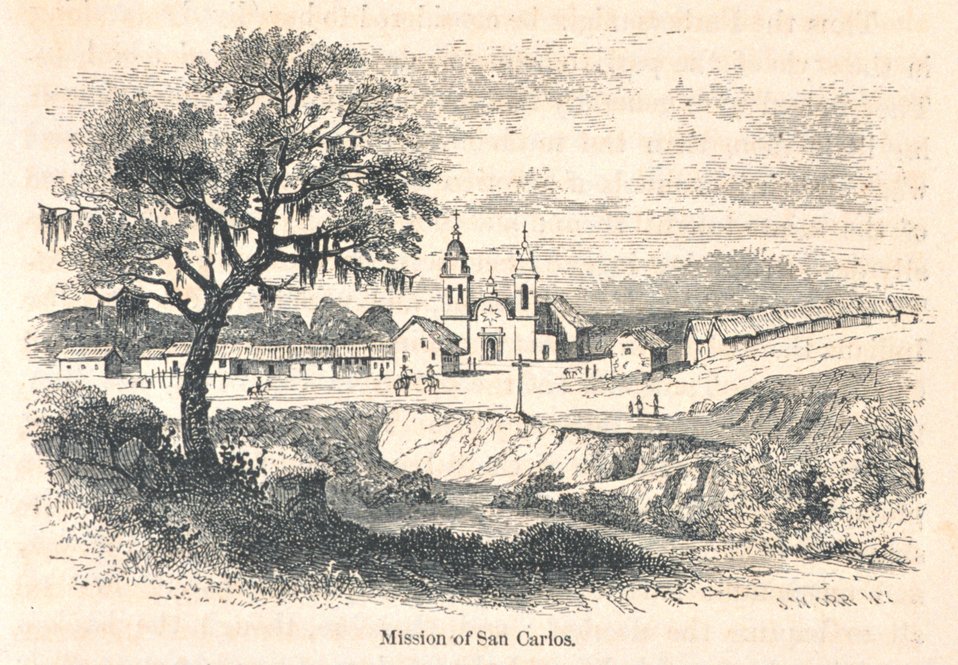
View of Mission San Carlos at Carmel. In: 'The Annals of San Francisco'. Frank Soule, John Gihon, and James Nesbit. 1855. Page 69. D. Appleton & Company, New York. F869.S3.S7 1855.